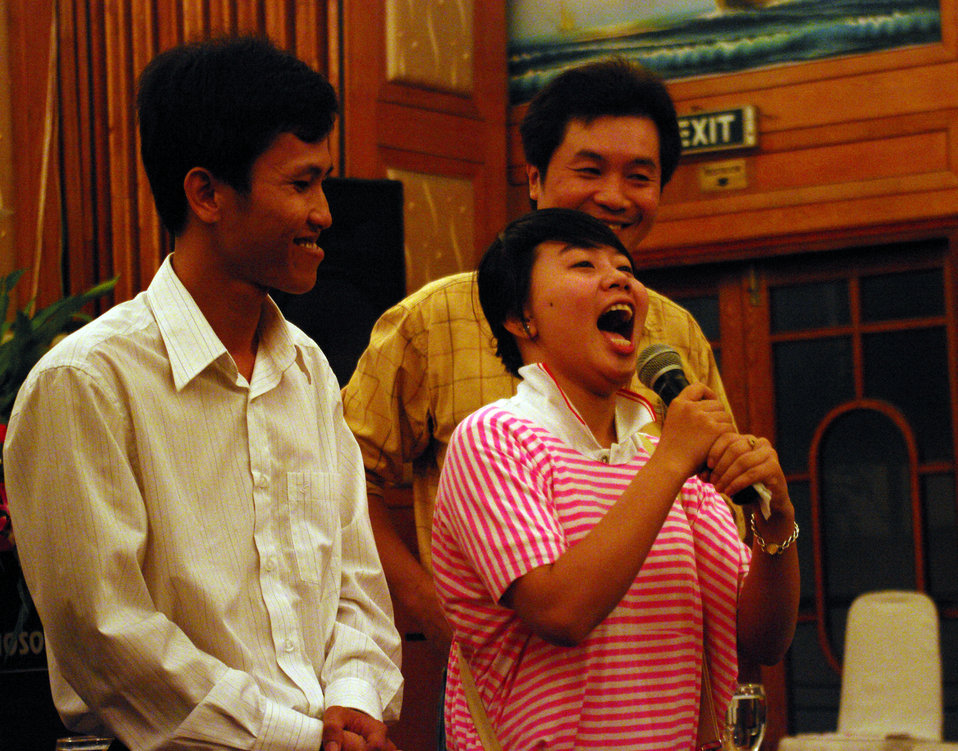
USAID Supports HIV Awareness among Street Youth and Young Men

Trainers and peer educators tell their stories on November 29, 2011, in Hanoi, Vietnam